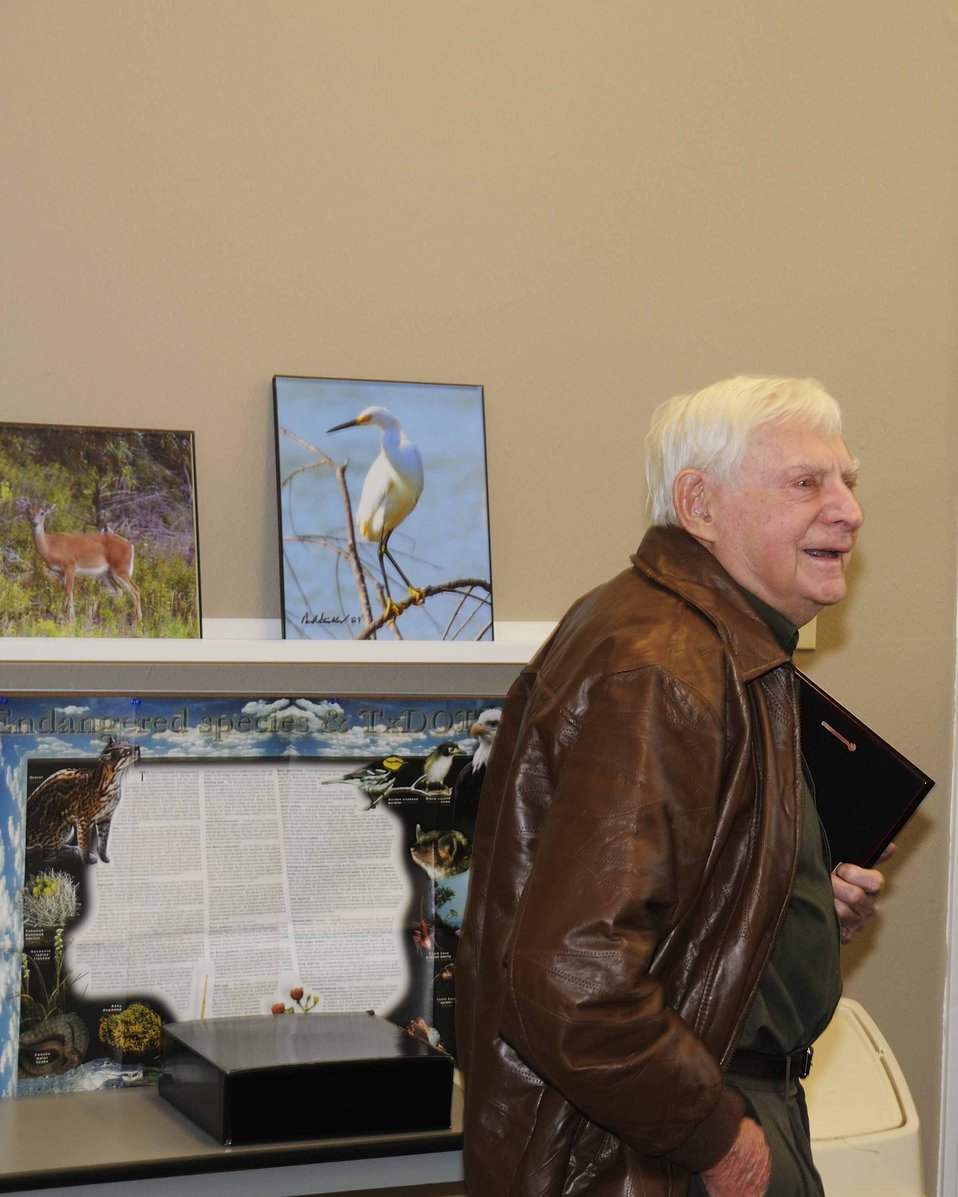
Karl Haller with plaque

Haller holds the 50-year service plaque he was awarded by Hagerman Refuge in spring 2013.